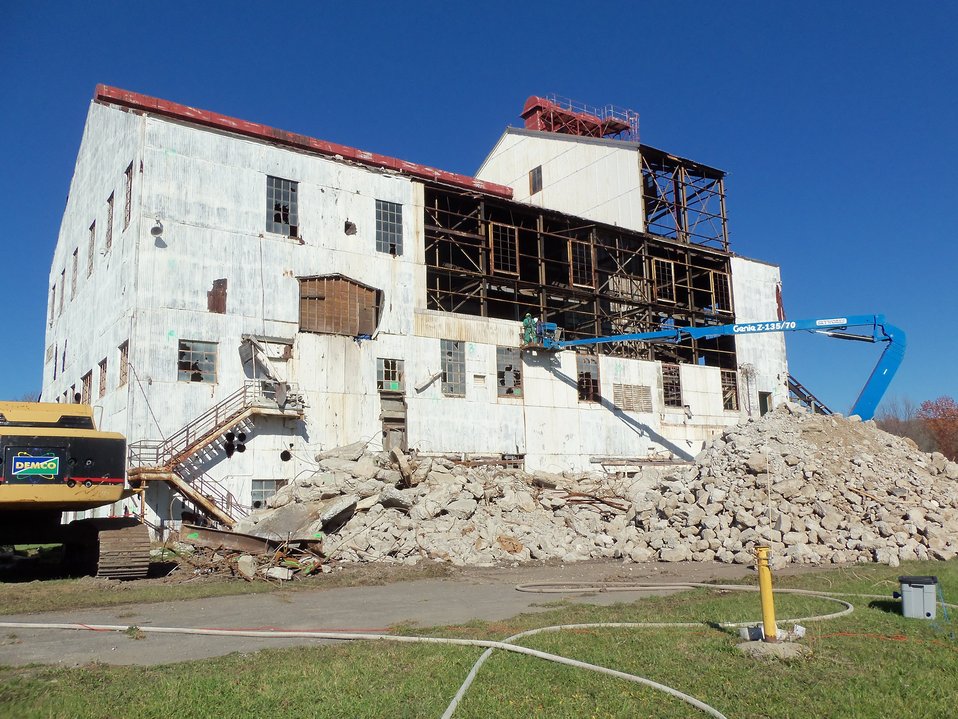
Building 401 side of building removal.

Activities from the Niagara Falls Storage Site, which is associated with the former Lake Ontario Ordnance Works. Formerly Utilized Sites Remedial Action Program (FUSRAP), a program initiated in 1974 to identify, investigate and clean up or control sites that were part of the Nation's early atomic energy and weapons program. Activities at the sites that are eligible for FUSRAP were conducted by Manhattan Engineer District (MED) or the Atomic Energy Commission (AEC), both predecessors of the Department of Energy (DOE). The U.S. Army Corps of Engineers was assigned management of FUSRAP by Congress in 1997.